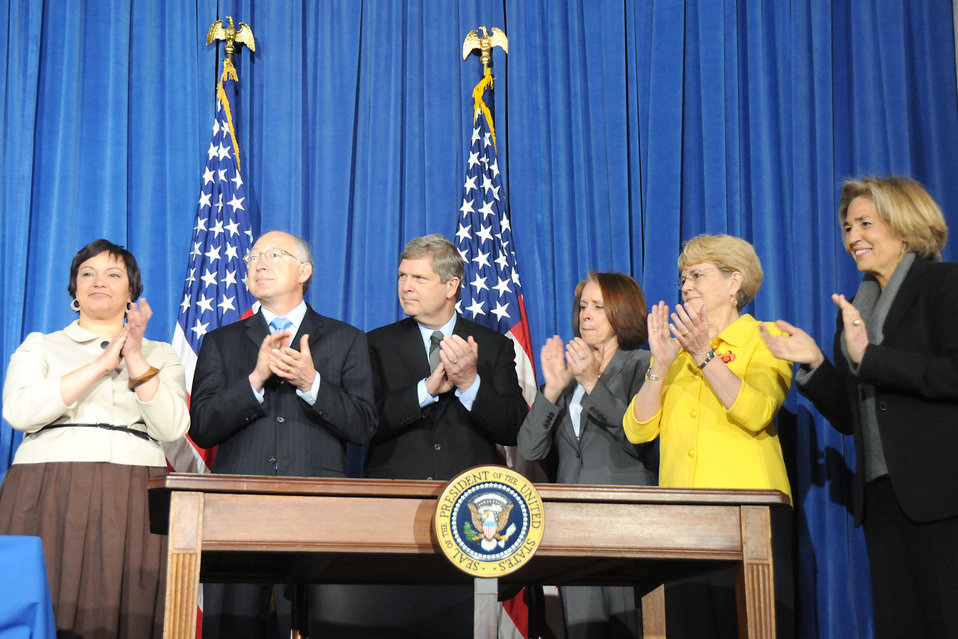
Listening to President Barack Obama's remarks are (L to R) Environmental Protection Agency Lisa Jackson, Interior Secretary Ken Salazar, Agriculture Secretary Tom Vilsack, Assistant Secretary of the Army for Civil Works Jo-Ellen Darcy, National Oceanic and Atmospheric Administrator Dr. Jane Lubchenco, and Deputy Under Secretary of Defense for Installations and Environment Dorothy Robyn. The event took place at the Department of Interior in Washington, D. C. on April 16, 2010. USDA photo 10di1316-135